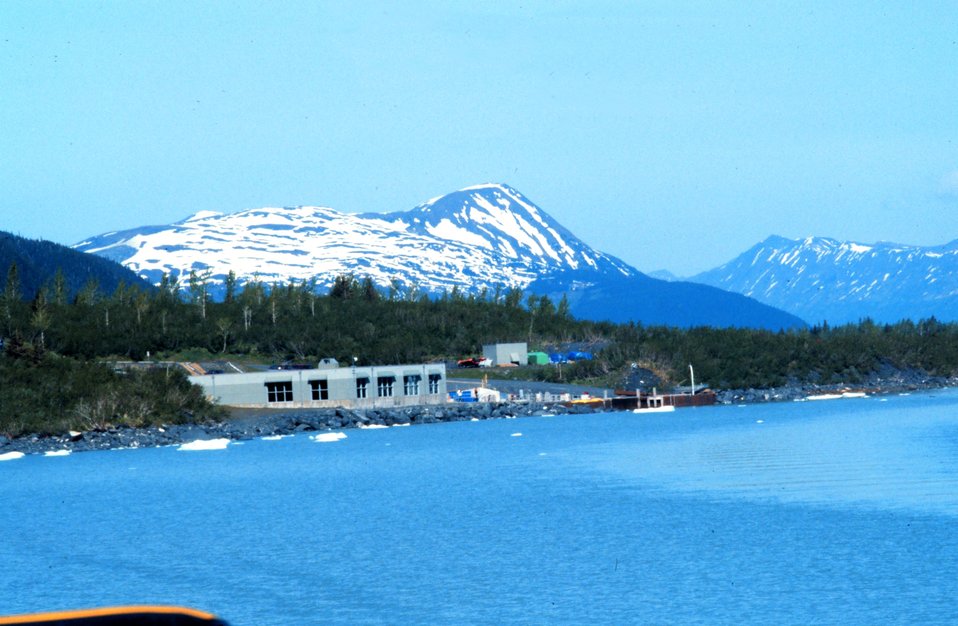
Seward area of Alaska